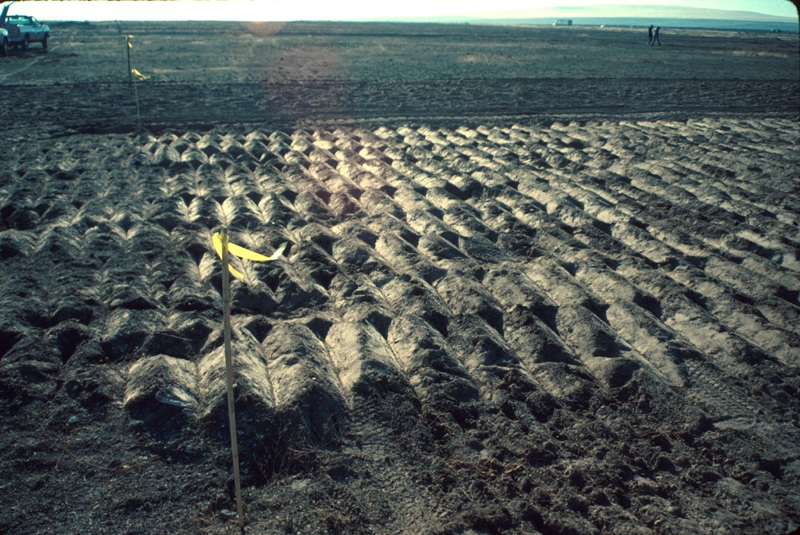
Seeding Range Restoration Project Lower Snake River District